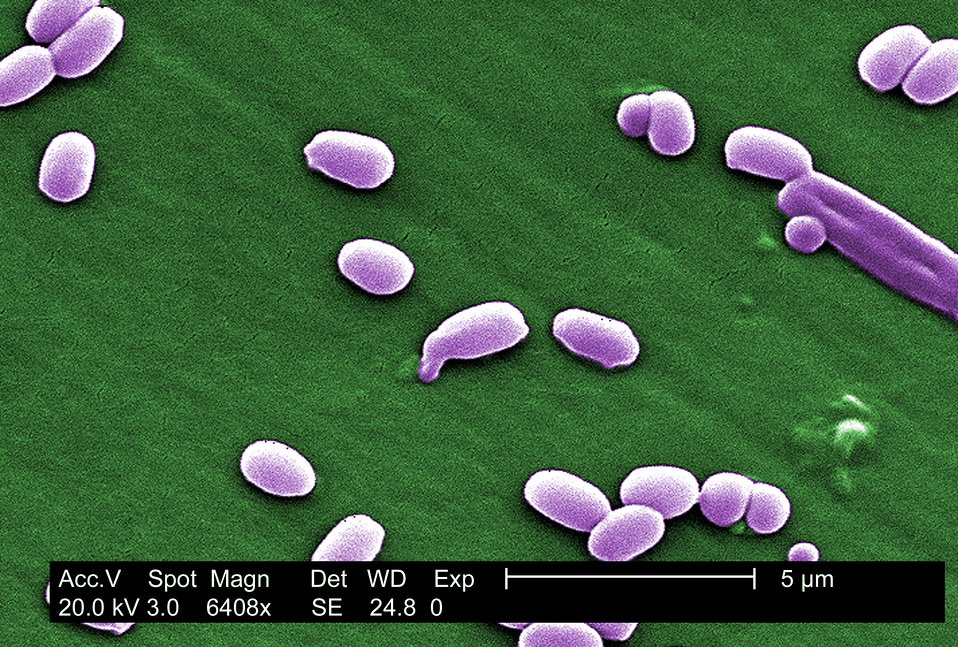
Under a magnification of 6,408X, this scanning electron micrograph (SEM) depicted spores from the Aimes strain of Bacillus anthracis bacteria. See PHIL 10124 for a colorized version of this image.